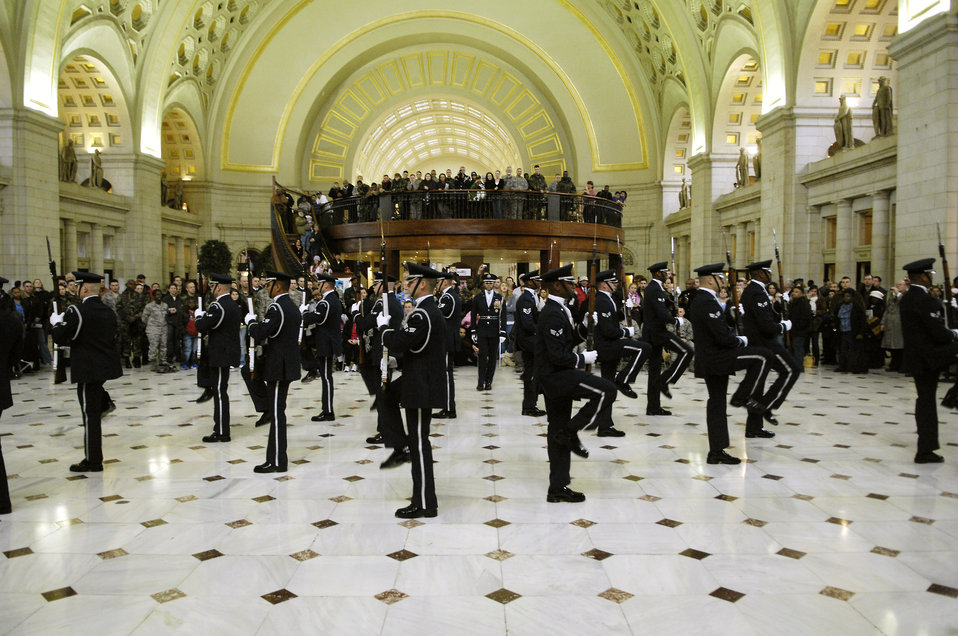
Air Force drill team kicks off 2008 season in D.C.

Air Force Honor Guard Drill Team members perform their new drill sequence during their unveiling performance Feb. 21 at Union Station in Washington, D.C. The unveiling drill is the first drill of the year and the formal presentation of the 2008 team to Air Force leadership and the general public. The drill team is the traveling component of the Air Force Honor Guard and tours Air Force bases worldwide showcasing the precision of today's Air Force to recruit, retain and inspire Airmen for the Air Force mission.